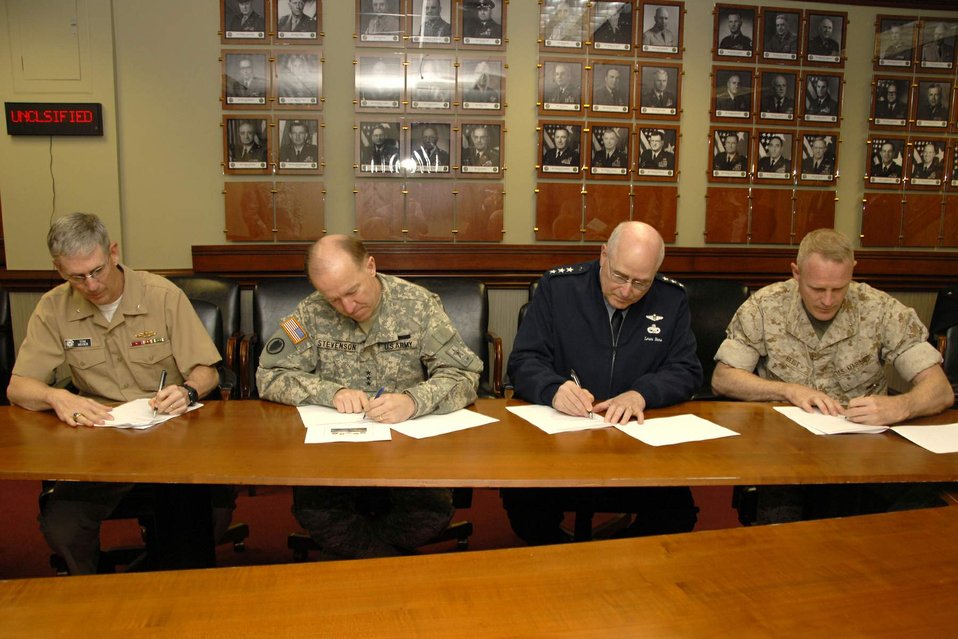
The signing of the JEBWG charter

The service logistics chiefs came together at the Pentagon April 13 to sign the Joint Expeditionary Basing Working Group charter. Shown signing the charter are Rear Adm. Thomas Moore, Army Lt. Gen. Mitchell Stevenson, Lt. Gen. Loren Reno and Marine Brig. Gen. David Reist. The goal of the JEBWG is